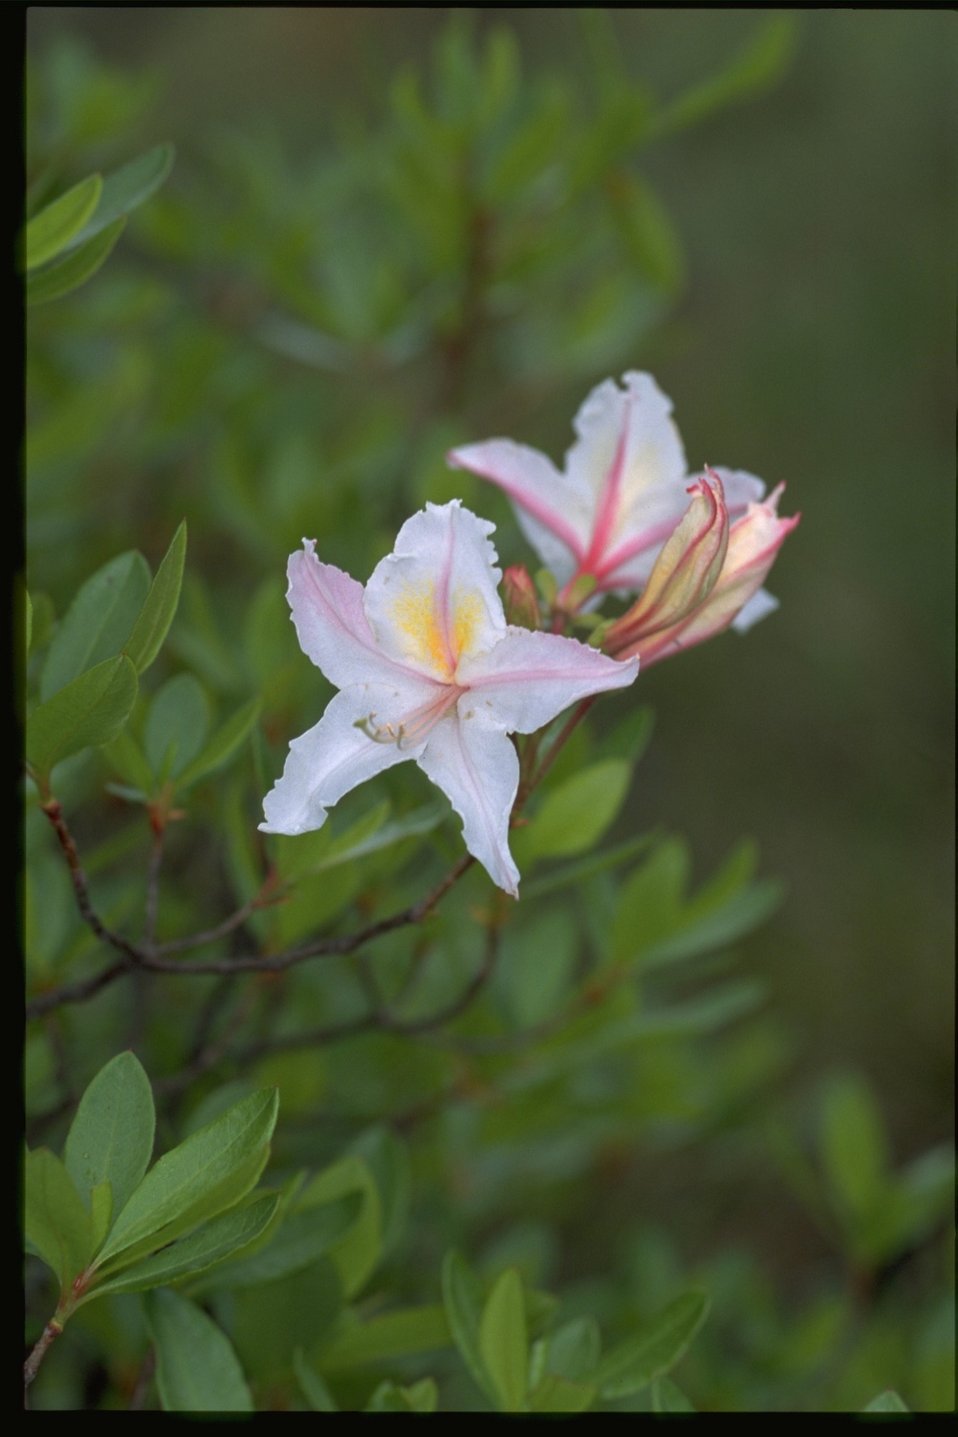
Medium shot of Rhodedendron occidentale.